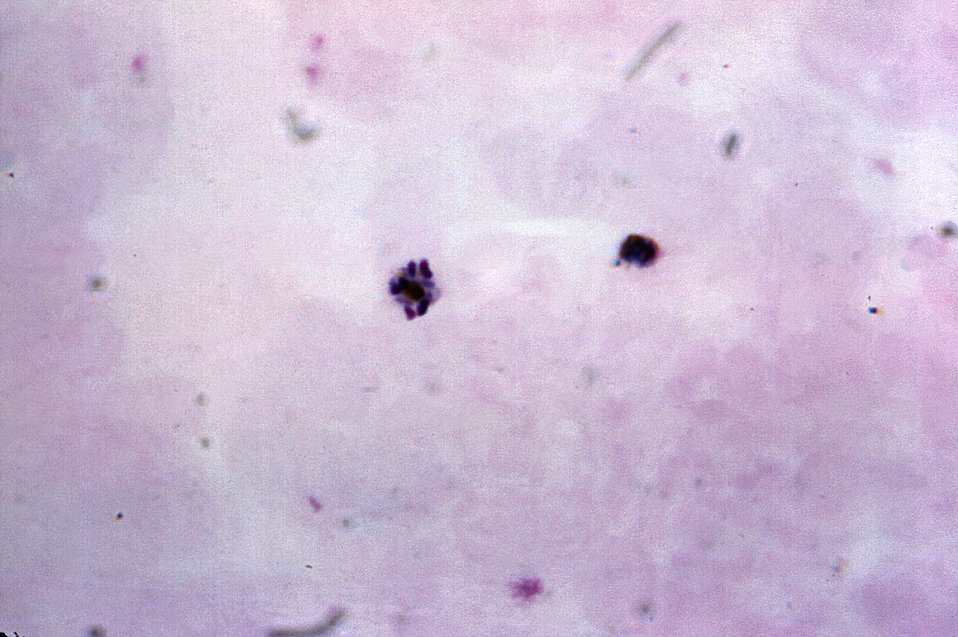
This thick film blood smear micrograph depicts an old Plasmodium malariae trophozoites (Rt), and an immature schizont containing eight chromatin masses (Lt).